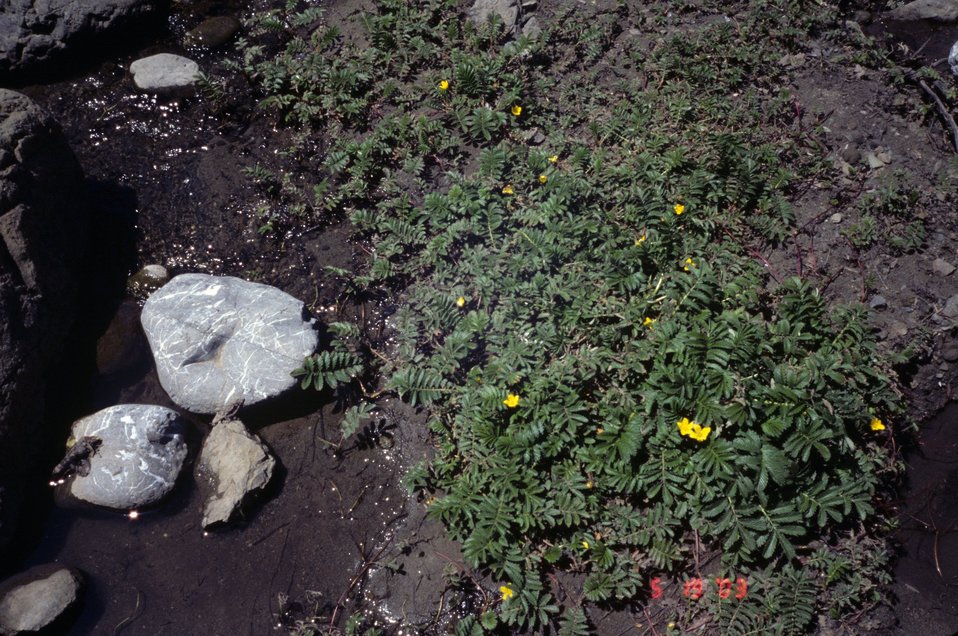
Pinnacle Gulch Beach